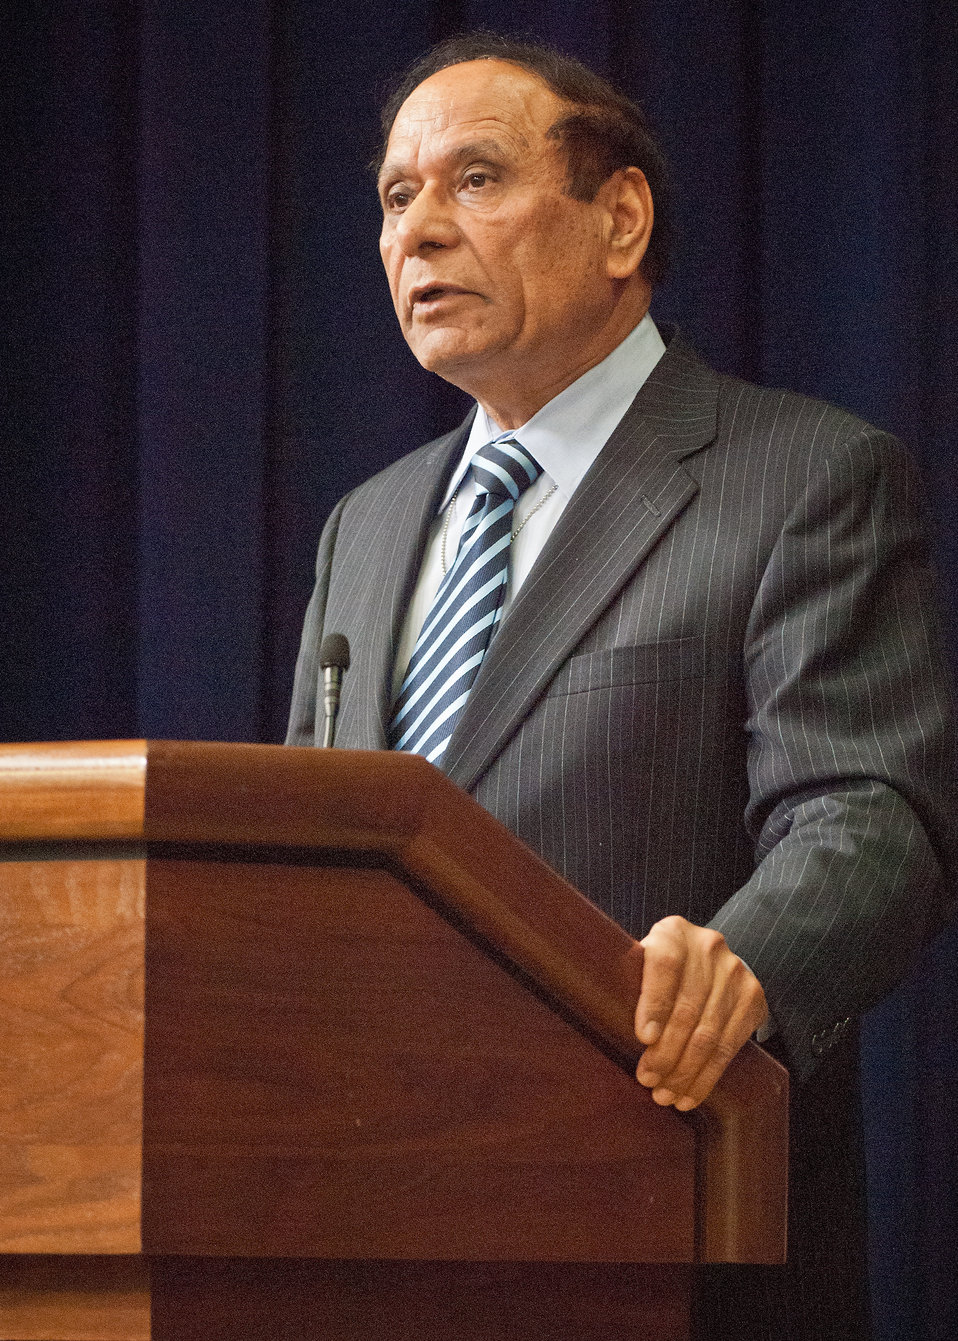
Dr. Isi Siddiqui, Chief Agriculture Negotiator, United States Trade Representative discussed agricultural trade at the 11th Annual Meeting of State Agriculture and Rural Leaders at the Eisenhower Executive Office Building in Washington, D.C., on Friday, January 6, 2012.